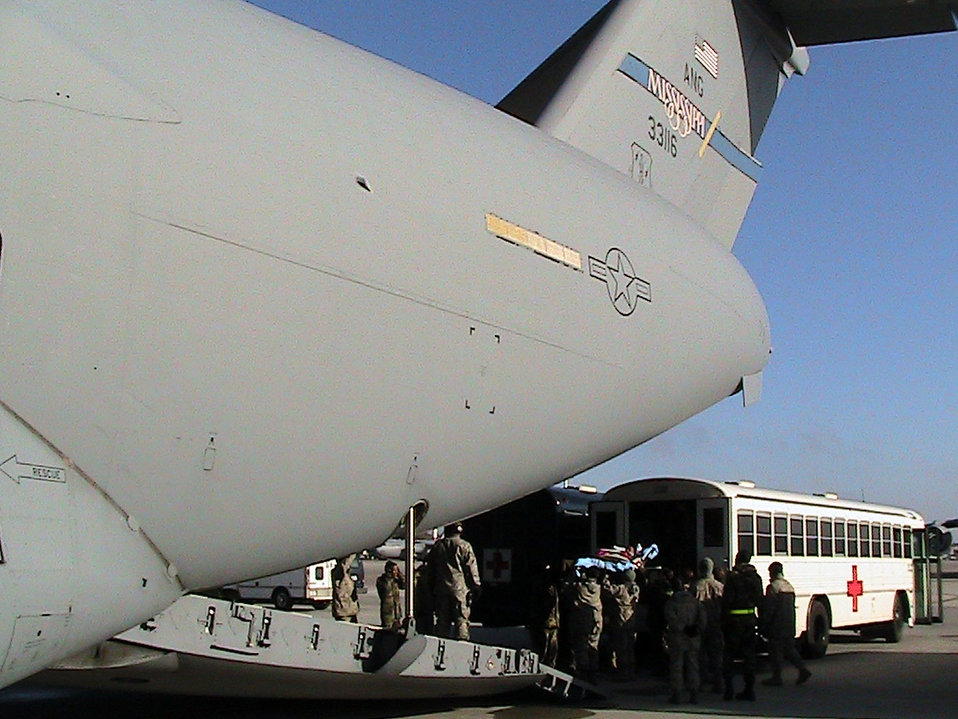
Aeromedical missions bring total force partners together

An aeromedical evacuation crew and military members load a patient onto a C-17 Globemaster III on its way to the United States to take patients to their next level of care Jan. 25 at Ramstein Air Base, Germany.